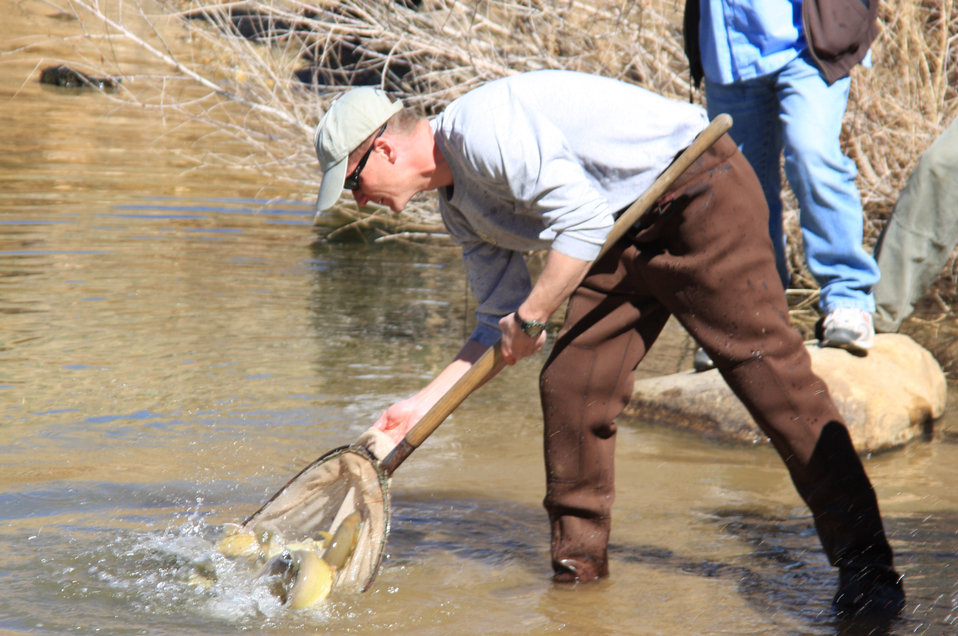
Gila Trout Release

Arizona Game and Fish Department Fish Specialist Jason Kline releases native Gila trout into Frye Mesa Reservoir in the Pinaleno Mountains on Feb. 23, 2010. The project, funded by the American Recovery and Reinvestment Act, created the first Gila trout season in Arizona.